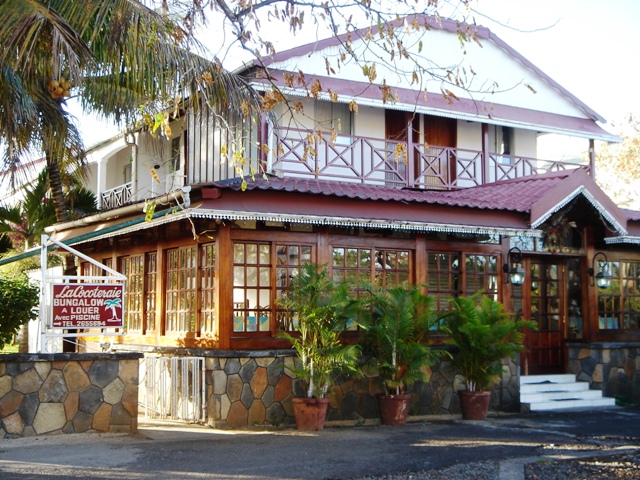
en: La Cocoteraie ja:ラ・ココテライア Taken by (WT-shared) Shoestring in September, 2006 Location: Mont Choisy